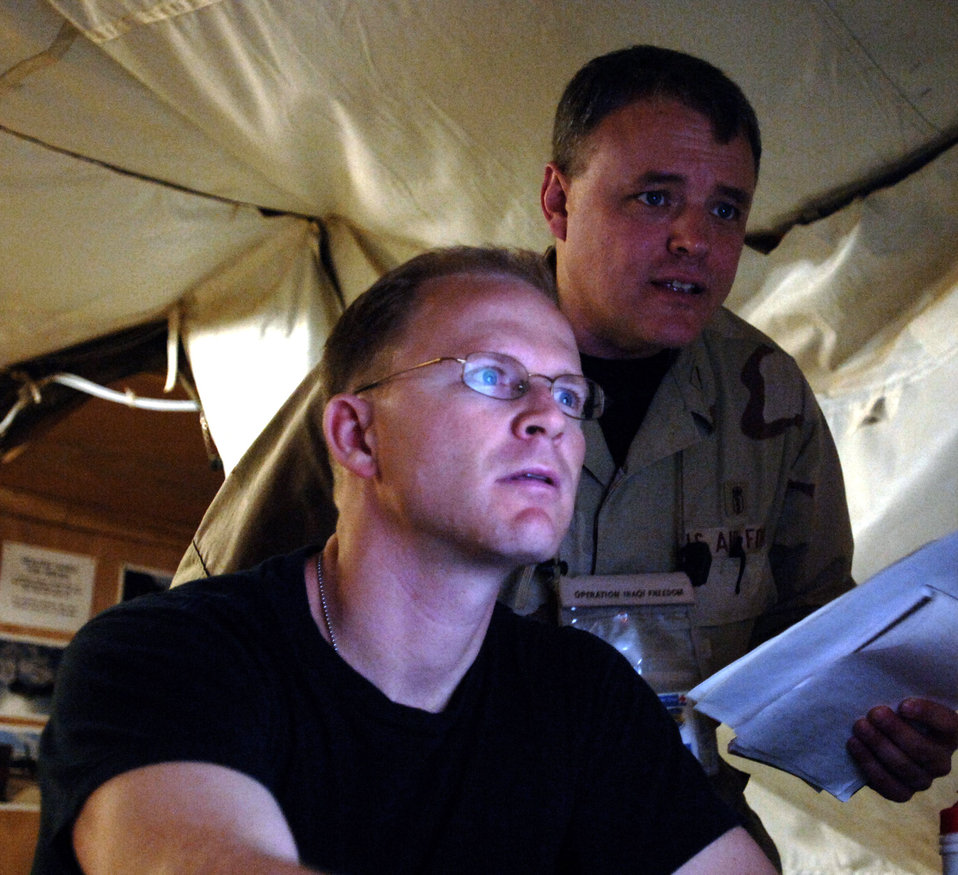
Radiology staff provides reliable, rapid response in Iraq

Maj. Dan Church (left) and Lt. Col. David Condie review CT scans and X-rays on current patients at the Air Force Theater Hospital Feb. 19 at Balad Air Base, Iraq. The radiology staff has two new 16 slice CT scanners that expedite the process from 90 minutes to about 10 minutes. Major Church and Colonel Condie are assigned to the 332nd Expeditionary Medical Group.